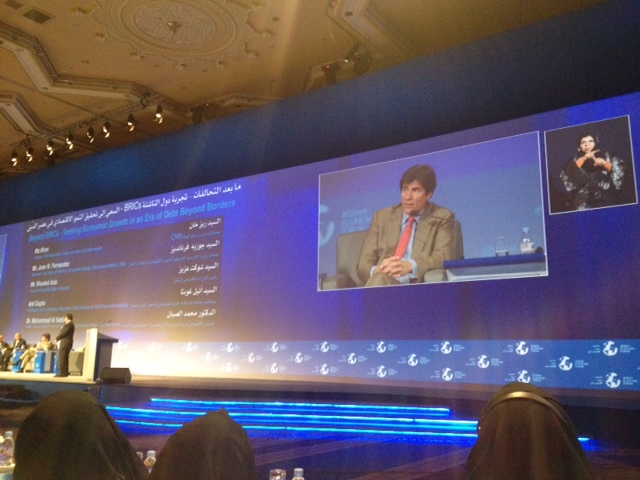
Assistant Secretary Fernandez Participates in the Jeddah Economic Forum

Assistant Secretary of State for Economic and Business Affairs Jose Fernandez participates in the Jeddah Economic Forum, “Beyond Borders -- Building Tomorrow’s Economies Today,” in Jeddah, Saudi Arabia, on March 4, 2012.